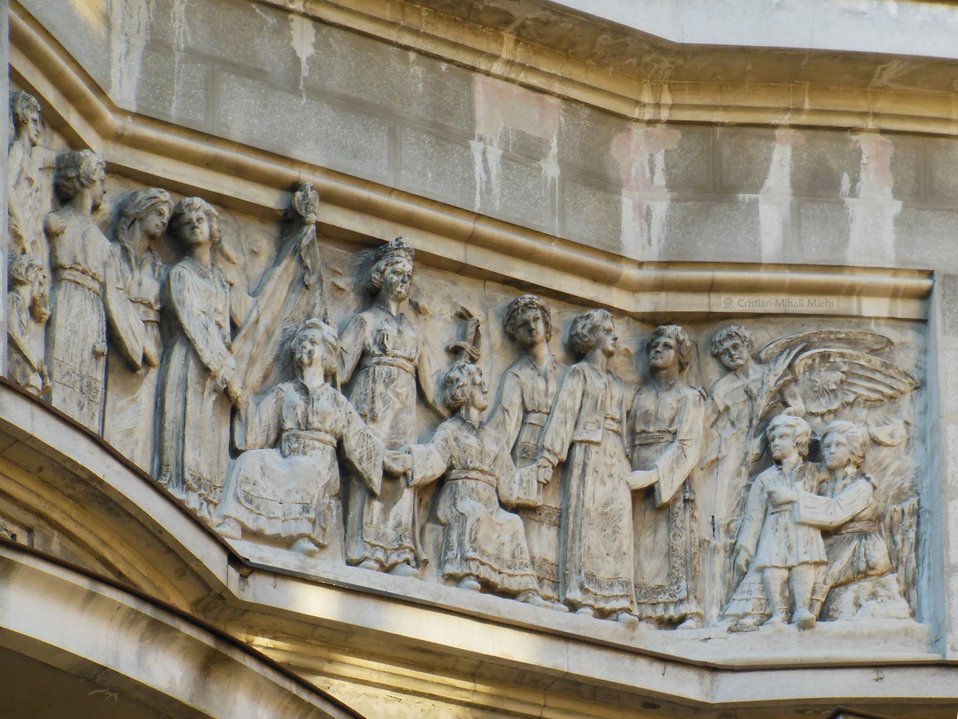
Română: Palatul Tinerimea Română – Altorelief: Unirea